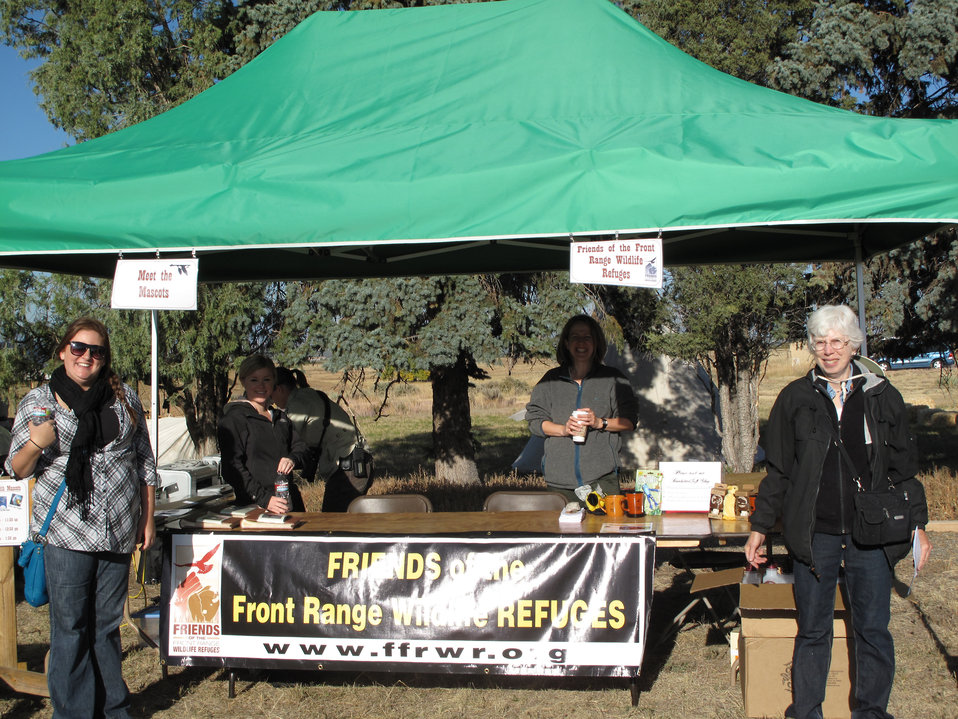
Refuge Round-up 2010

All the services mascots were here to celebrate with us and these lovely ladies took pictures for everyone.